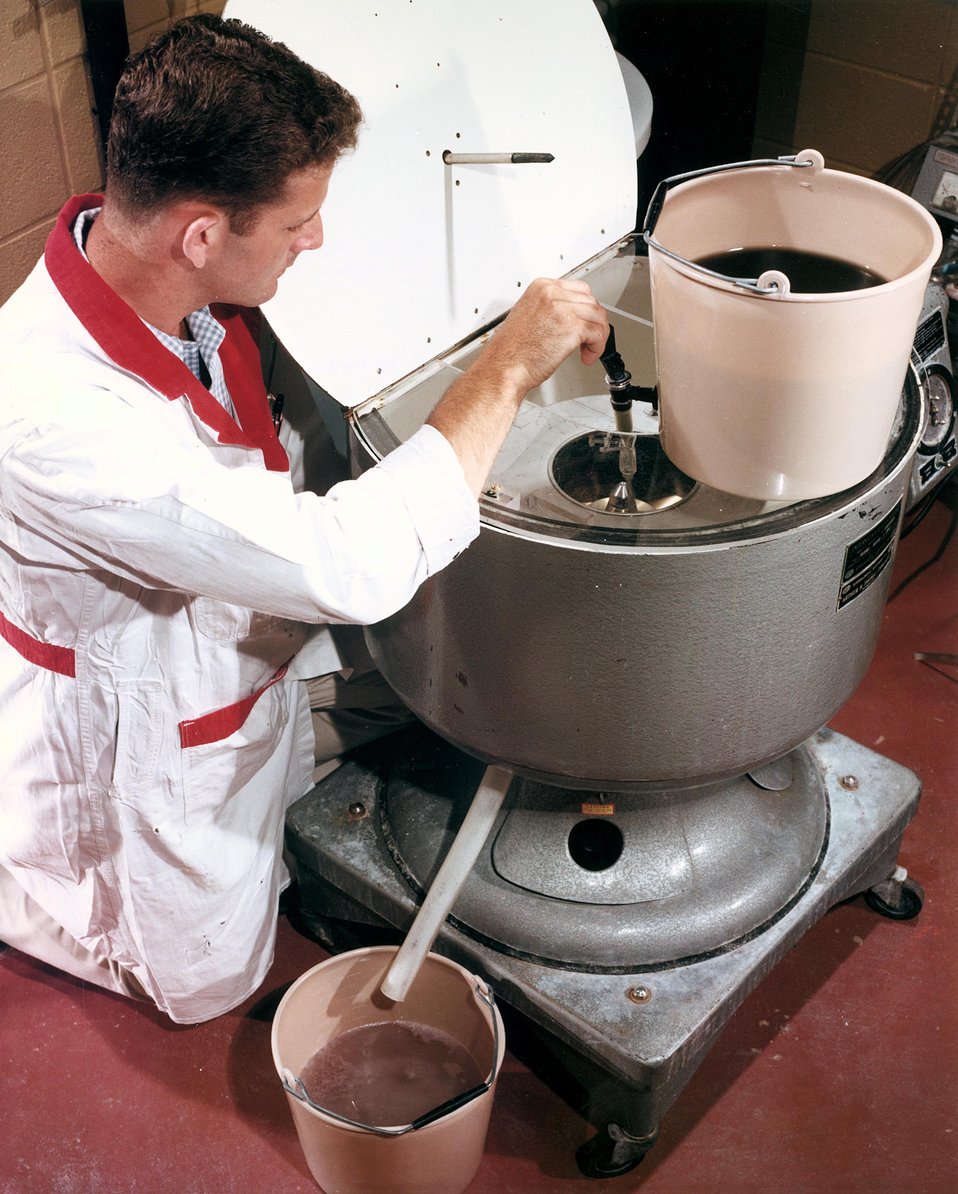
Continuous collection of algae in basket-type centrifuge. c. 1966